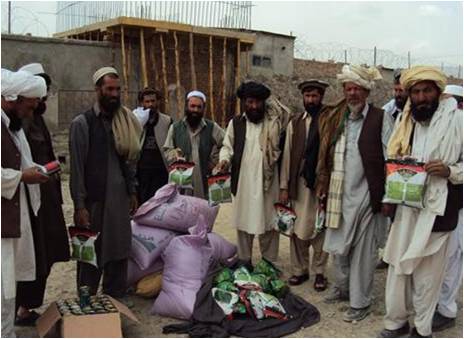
Healthy Vegetables, Higher Yields